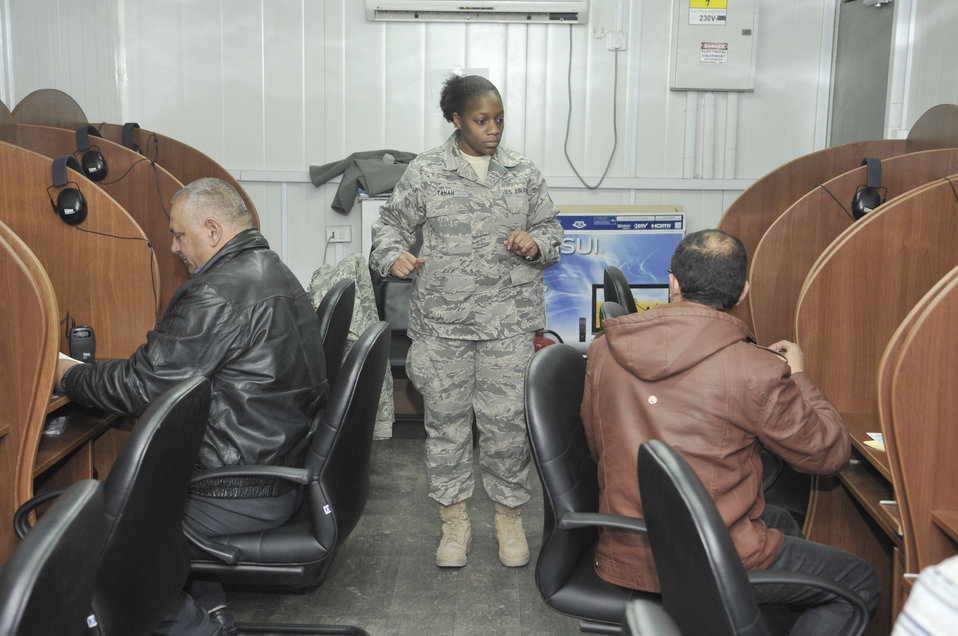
Airman provides gateway for Iraqis to American training

Tech. Sgt. Fatema Tahan reviews instructions for the American Language Course Placement Test, Feb. 6, 2011, at Forward Operating Base Union III, Iraq. Sergeant Tahan is the Iraq Security Assistance Mission English Language Program test administrator.